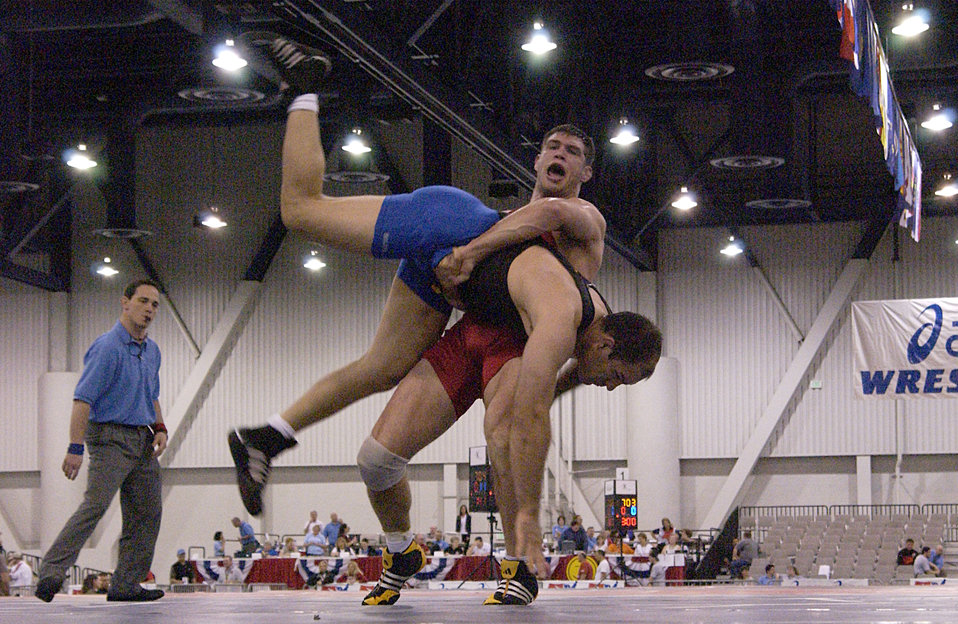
Air Force wrestling team wins national title

LAS VEGAS -- Philip Johnston, a 211.5-pound-division Greco-Roman wrestler, lifts an opponent during his final match in the 2004 U.S. National Wrestling Championships held here April 9. Johnston finished seventh in his division.